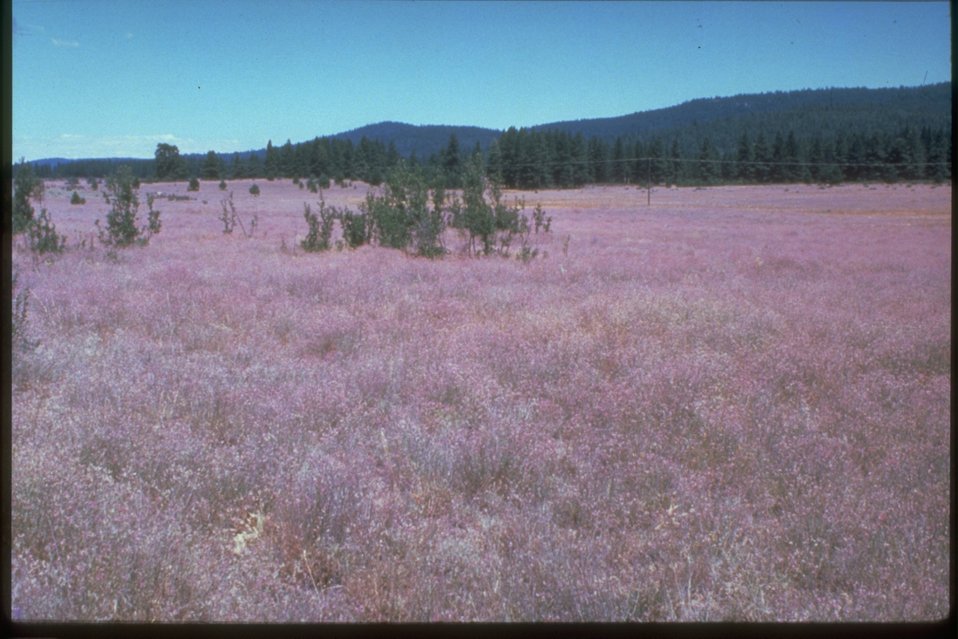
A field of squarrose knapweed.